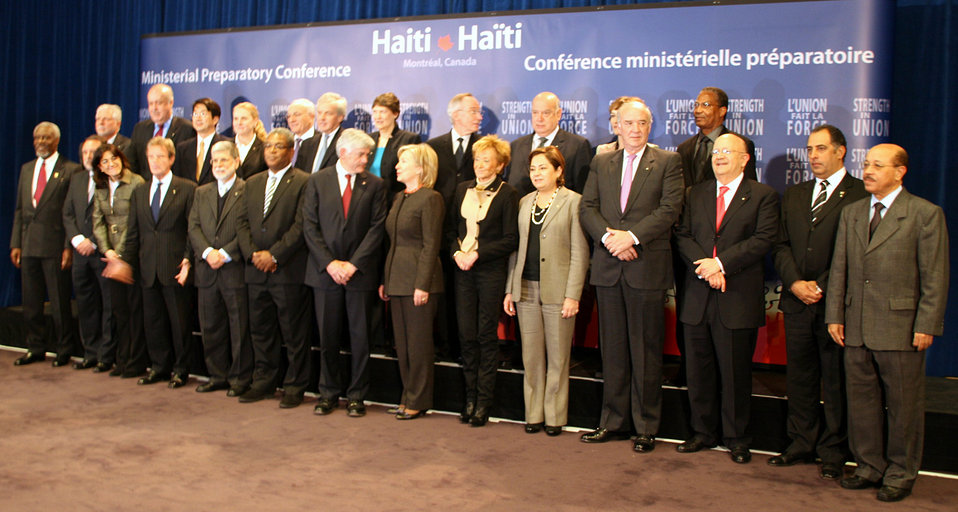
Secretary Clinton in Montreal

U.S. Secretary of State Hillary Rodham Clinton in group photo for attendees of meetings regarding the Haiti Earthquake hosted by the Government of Canada in Montreal, Canada January 25, 2010.